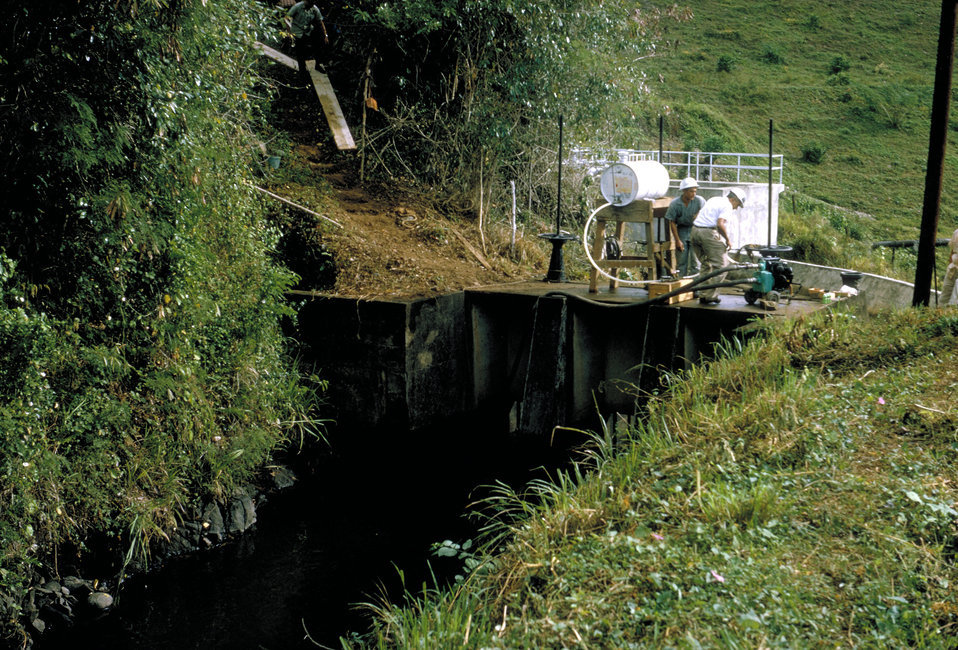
Puerto Rican sanitation workers applying acrolein to stream to control bilharzia (schistosomiasis)